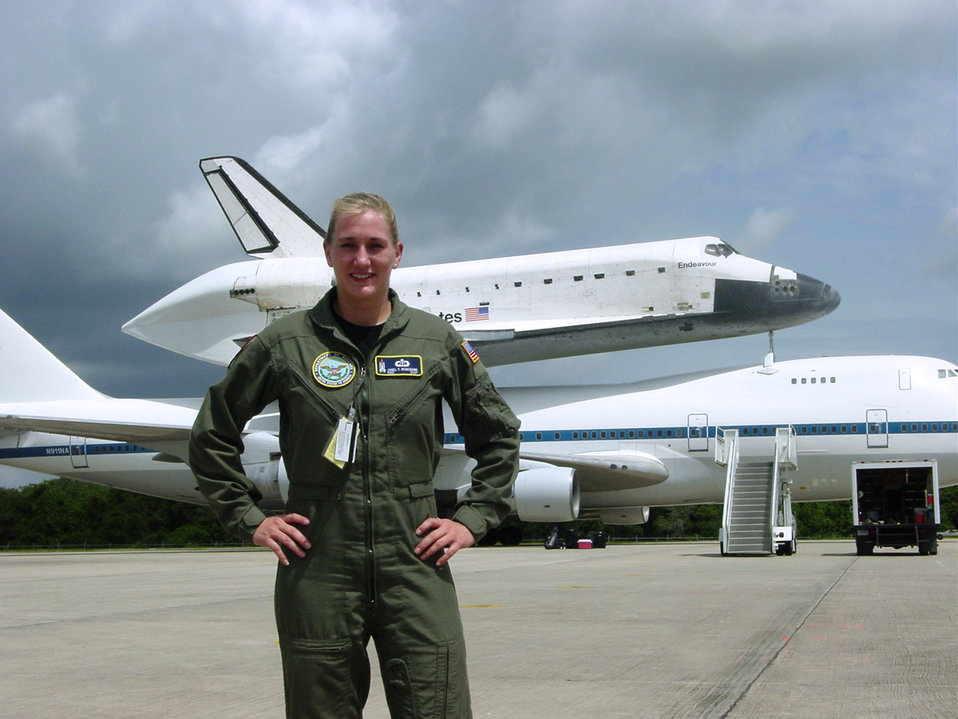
Weather Airmen protect shuttle

EDWARDS AIR FORCE BASE, Calif. -- Tech. Sgt. Janel Uiterwyk stands in front of Space Shuttle Endeavour which is mounted on a modified Boeing 747 here. The 747 is used to ferry the shuttle to its original landing site if forced to land in another location. Sergeant Uiterwyk is assigned to the 45th Weather Squadron at Patrick Air Force Base, Fla.